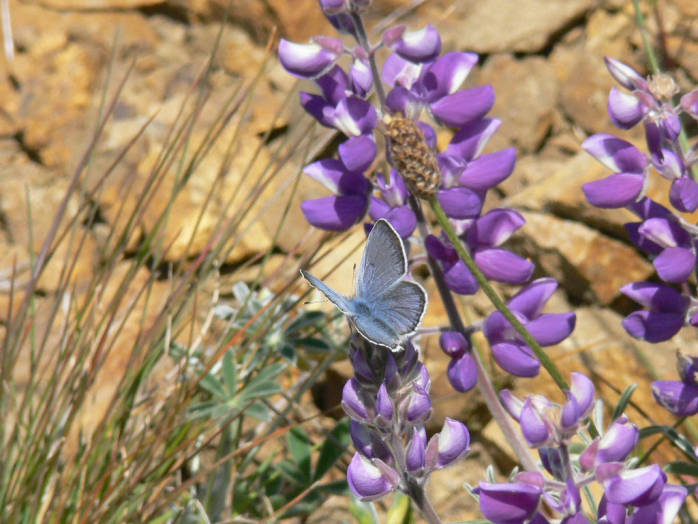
Mission Blue Butterfly (endangered)

Photo credit: Patrick Kobernus

A male mission blue butterfly rests upon a silver bush lupine (Lupinus albifrons). As of 14 December 2009, the 'mission blue butterfly' (Icaricia icarioides missionensis) is listed as Endangered under the U.S. Endangered Species Act.